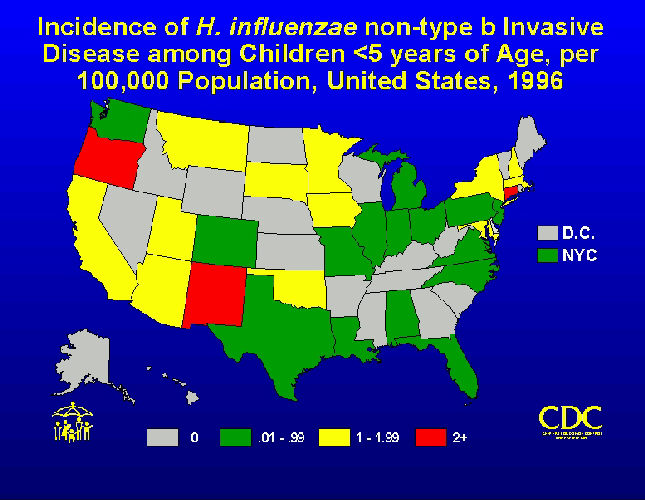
Incidence of H. influenzae non-type b invasive disease among children